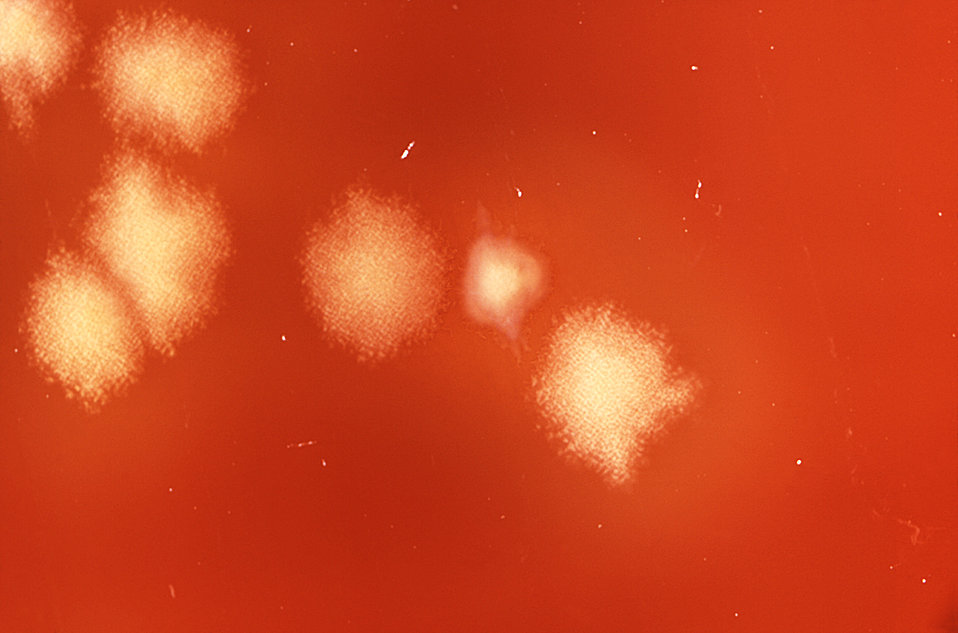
Under only a 2X magnification, this photograph revealed some of the details displayed atop a Petri dish culture of rod-shaped, Gram-positive Clostridium septicum bacteria.